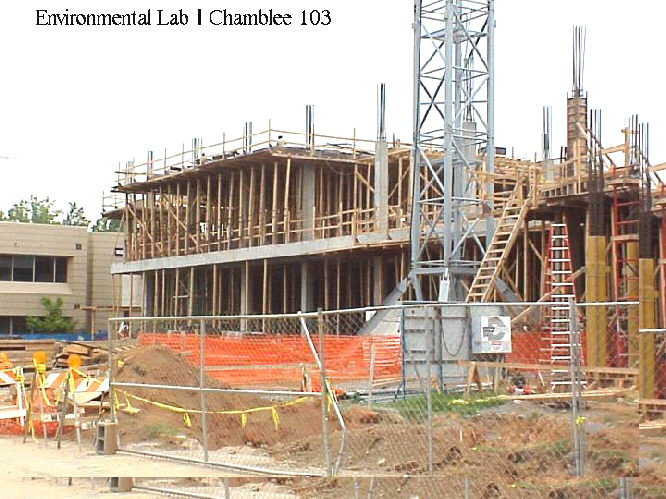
Environmental Lab, Chamblee 103.